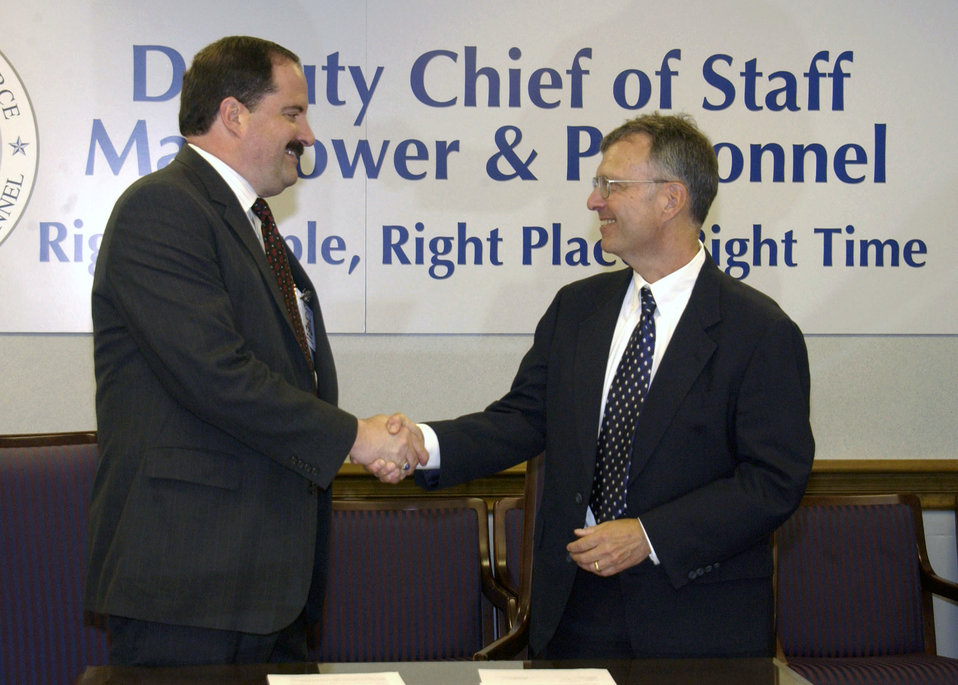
Air Force partners with Better Business Bureau

Tim Beyland (left), assistant deputy chief of staff for Air Force Manpower and Personnel, and Steven Cole, CEO of the Council of Better Business Bureaus, shake hands after signing a memorandum of understanding July 16 at the Pentagon. The memorandum establishes a partnership between the Air Force and CBBB to offer programs, services and materials to assist Air Force members and their families with a variety of consumer-related issues.